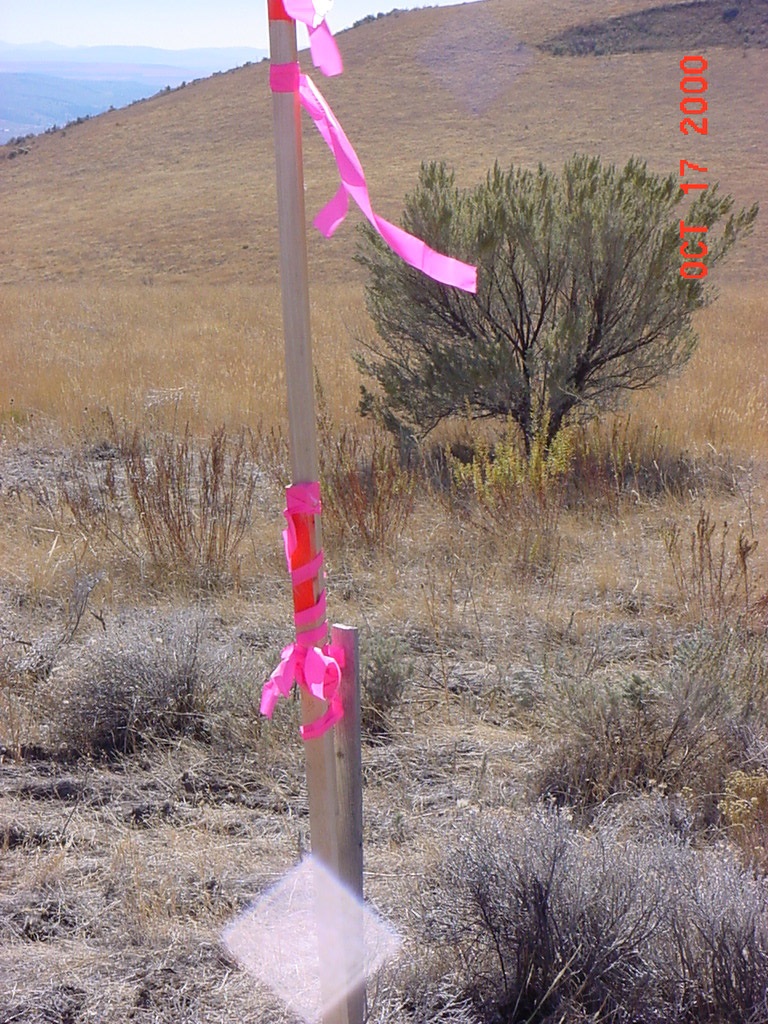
Cadastral Surveys Idaho Bureau of Land Management